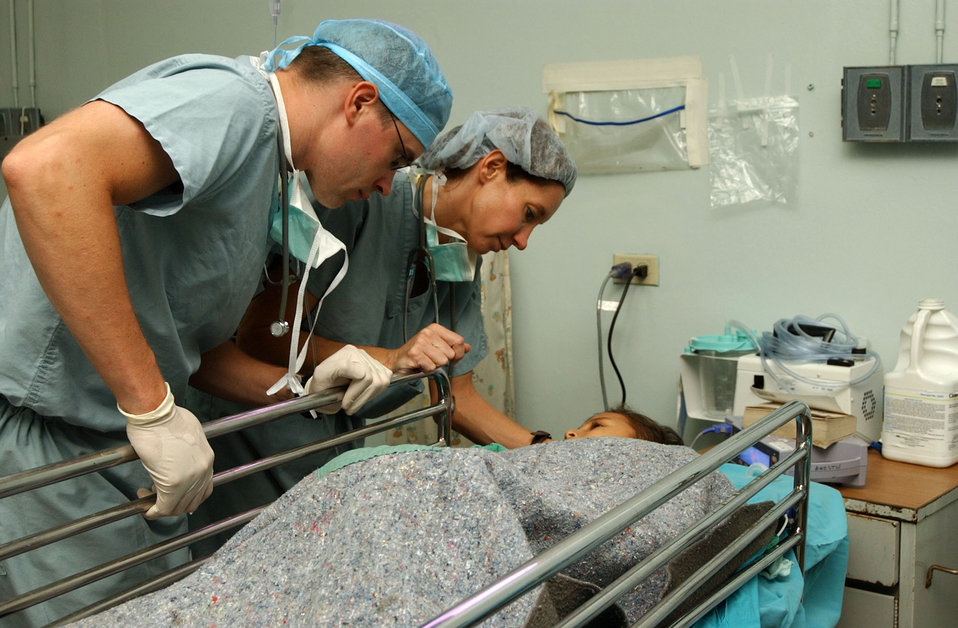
Teamwork

Maj. (Dr.) Christopher James and Maj. Elizabeth Cooley tend to a 9-year-old boy at the Hospital Esquela in Tegucigalpa, Honduras. Medics from Wilford Hall Medical Center in San Antonio and Joint Task Force-Bravo at Soto Cano Air Base, Honduras, treated more than 200 people during a training exercise.